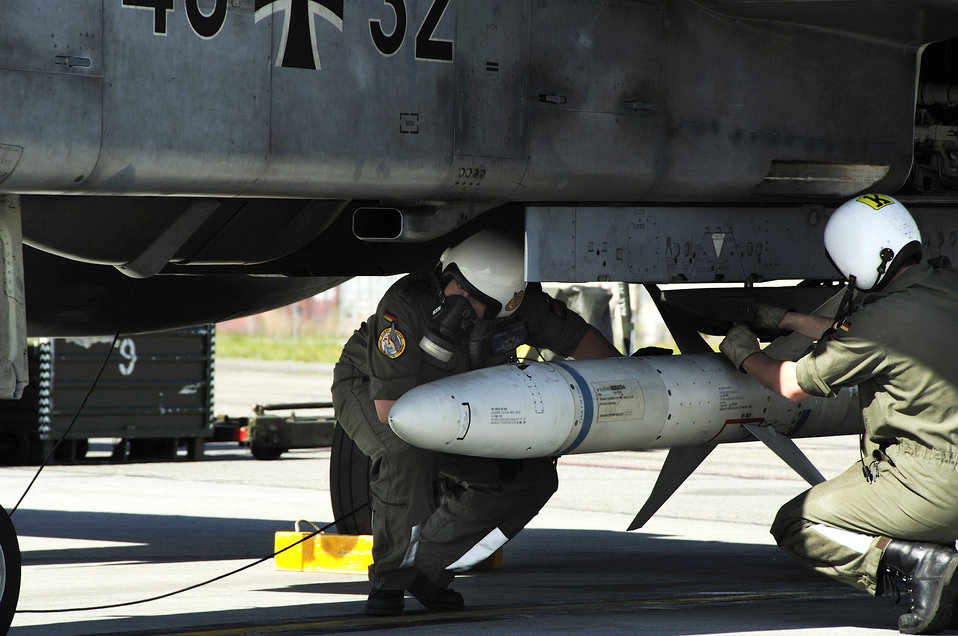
Joint training at Red Flag Alaska 08-3

Two German crew chiefs prepare a Tornado for take off to participate in Red Flag-Alaska 08-3 June 9 at Eielson Air Force Base, Alaska. Red Flag-Alaska is a series of Pacific Air Forces commander-directed field training exercises for U.S. forces, providing joint offensive counter-air, interdiction, close-air-support and large-force-employment training in a simulated combat environment.